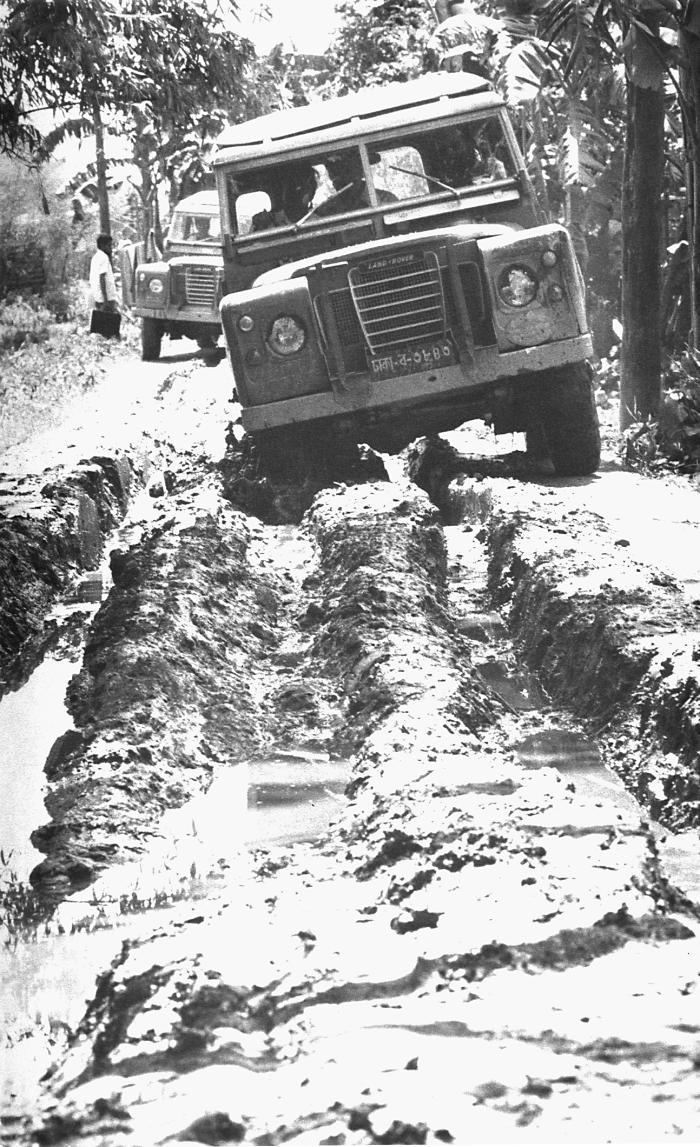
This photograph, by Pierre Claquin, M.D., B.A.C., who at the time was a member of the World Health Organization's Smallpox Eradication Program, was provided by former E.I.S. officer, Stanley O. Foster M.D., M.P.H., and was one of a series entitled 'The Story of One Smallpox Jeep', which depicted the travails faced by the jeep, and its occupants of public health practitioners, as they road through the Bangladesh countryside in an attempt to eradicate smallpox from the country.